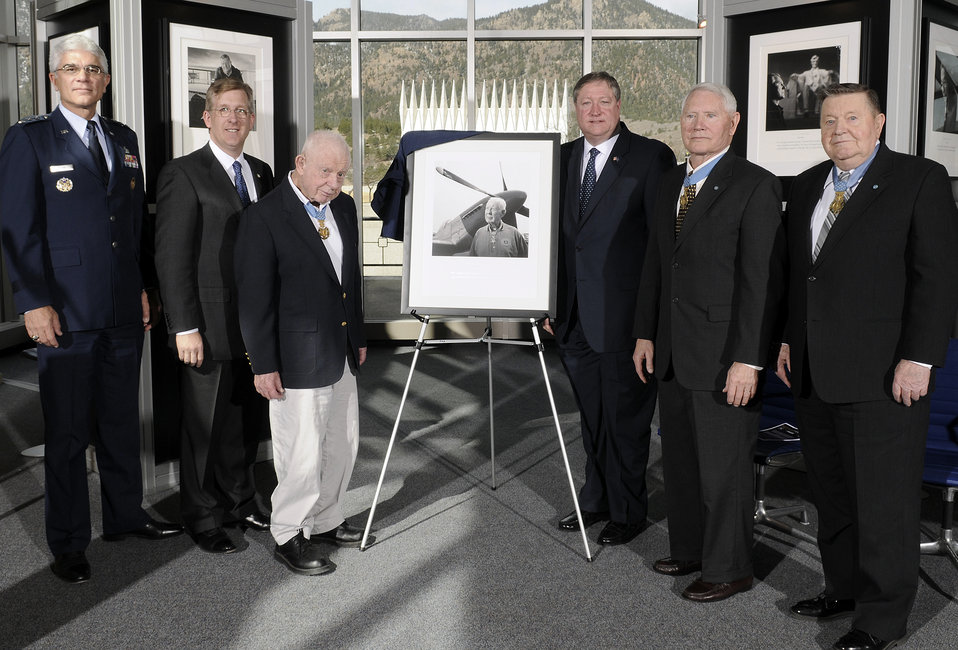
'Visions of Valor' portraits honor heroes

Lt. Gen. John F. Regni (left to right), David J. McIntyre, retired Col. Bernard Fisher, Secretary of the Air Force Michael B. Donley, retired Cols. Leo Thorsness and Joe Jackson stand next to an unveiled a portrait of Colonel Fisher during the